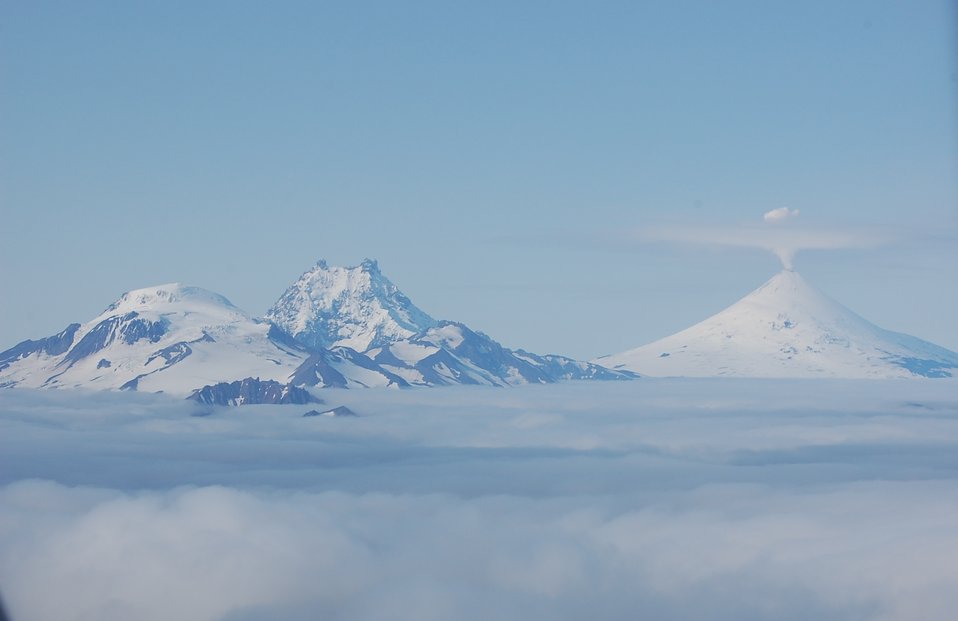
Unimak Volcanoes

Roundtop, Isanotski, and Shishaldin Volcanoes, Unimak Island, Alaska Maritime National Wildlife Refuge